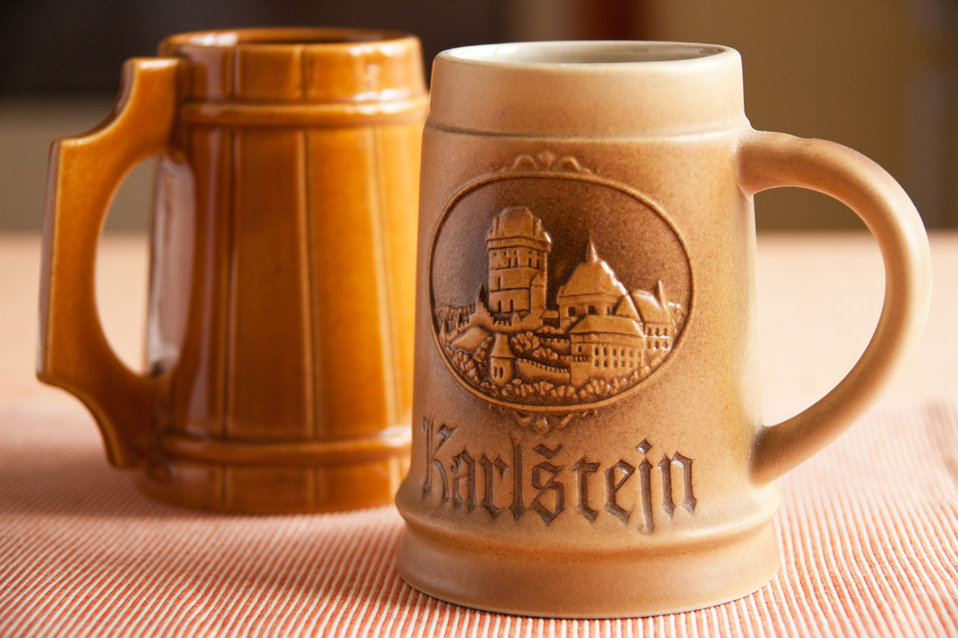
Beer mugs on a table.